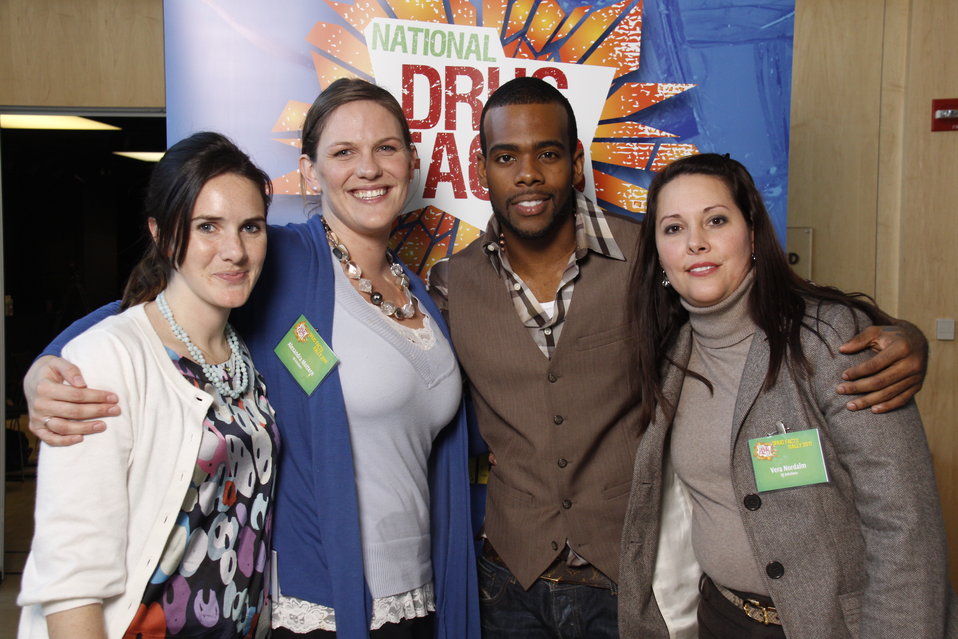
NDFW Mentor Event